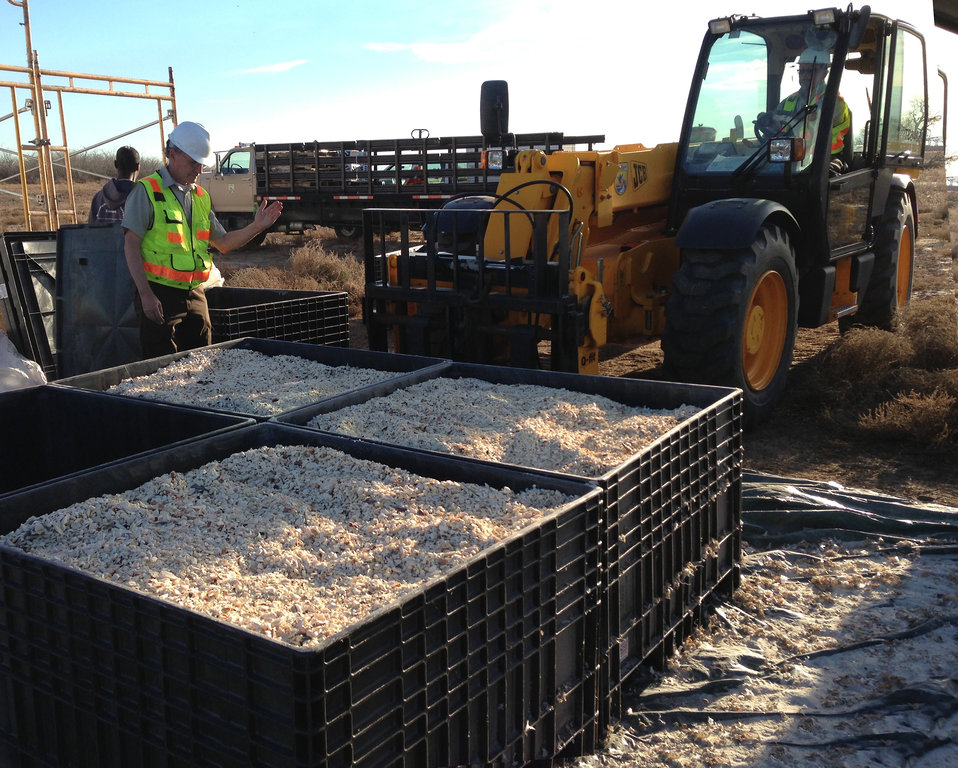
Crushed ivory in large bins for transport